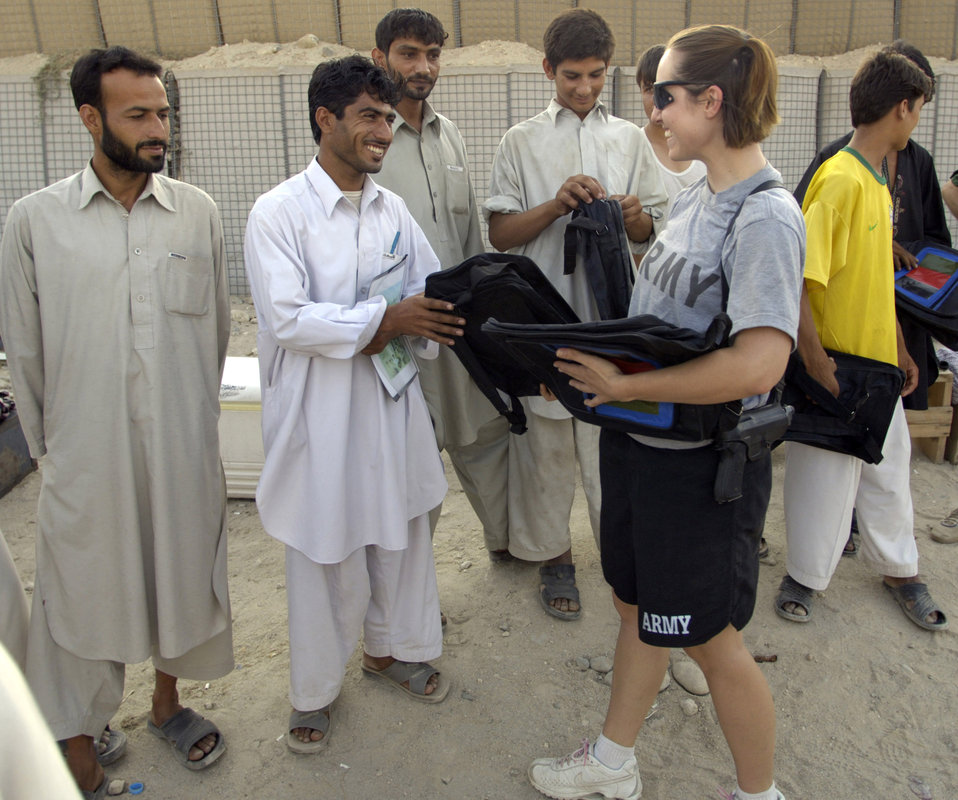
Volleyball unites Afghans, Americans

Army Sgt. Sam St. Pierre hands out book bags to the participants of a volleyball game hosted by Airmen and Soldiers Aug. 26 at Forward Operating Base Mehtar Lam, located in Afghanistan's Laghman Province. The weekly volleyball games are designed to bring area high school students from the province's five districts to the base to meet and interact with military members in a friendly atmosphere. Sergeant St. Pierre is a Provincial Reconstruction Team member and Army civil affairs specialist.